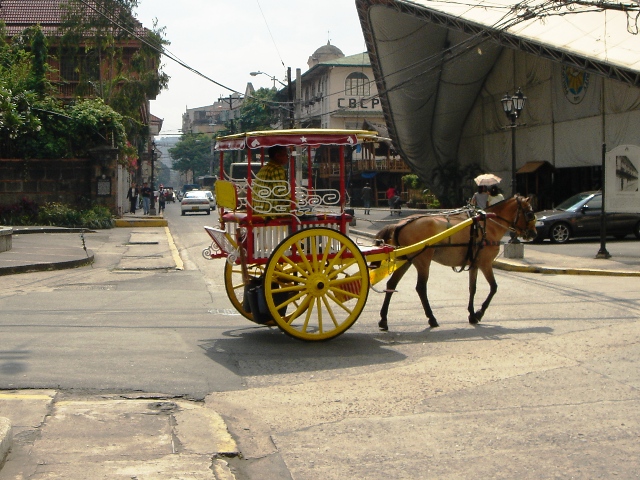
Calesa, a traditional means of transportation in Manila By Shoestring in Feb. 2006 Was in category Manila on wikivoyage